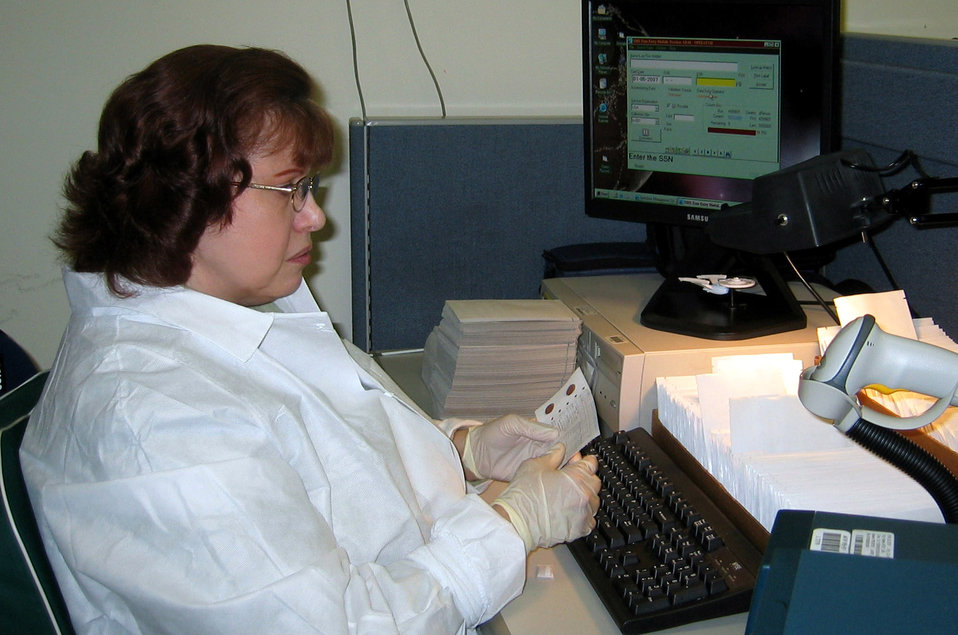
Defense Department DNA registry

Diane Giampetroni, a technician at the Defense Department's DNA Registry in Gaithersburg, Md., processes the 5 millionth DNA sample from a U.S. servicemember to be entered into the inventory, Jan. 23. Ms. Giampetroni has processed more than 520,000 specimens since joining the DNA Registry staff in 1995.